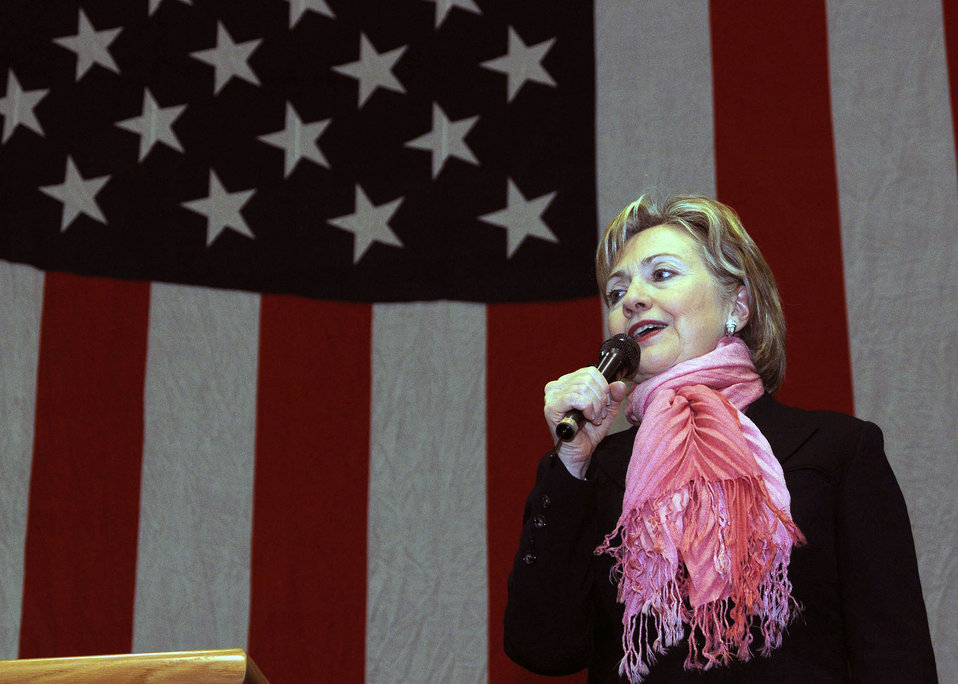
Secretary of state visits Yokota

Secretary of State Hillary Clinton speaks to military members and their families Feb. 22 at Yokota Air Base, Japan. She took the opportunity to visit during a refueling stop there on her way back to Washington D.C.